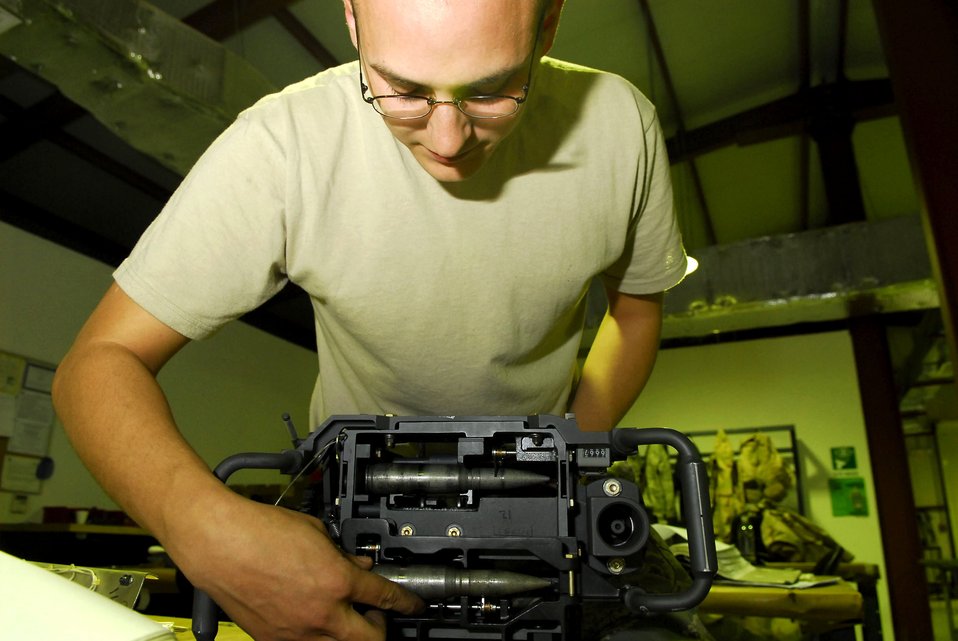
It's ready to go

Senior Airman Brandon Dutton tests a universal ammunition loader system Dec. 28 at Balad Air Base, Iraq. The UALS is used to load ammo rounds into an F-16 Fighting Falcon. Airman Dutton is an armament systems technician with the 332nd Expeditionary Maintenance Squadron.